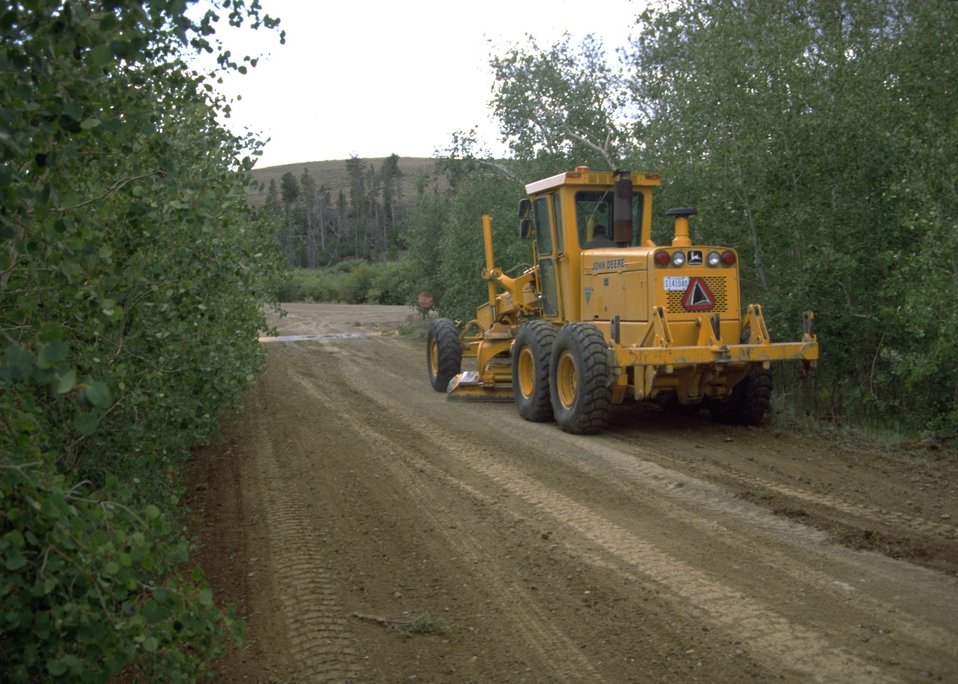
Bulldozer on an unknown road.